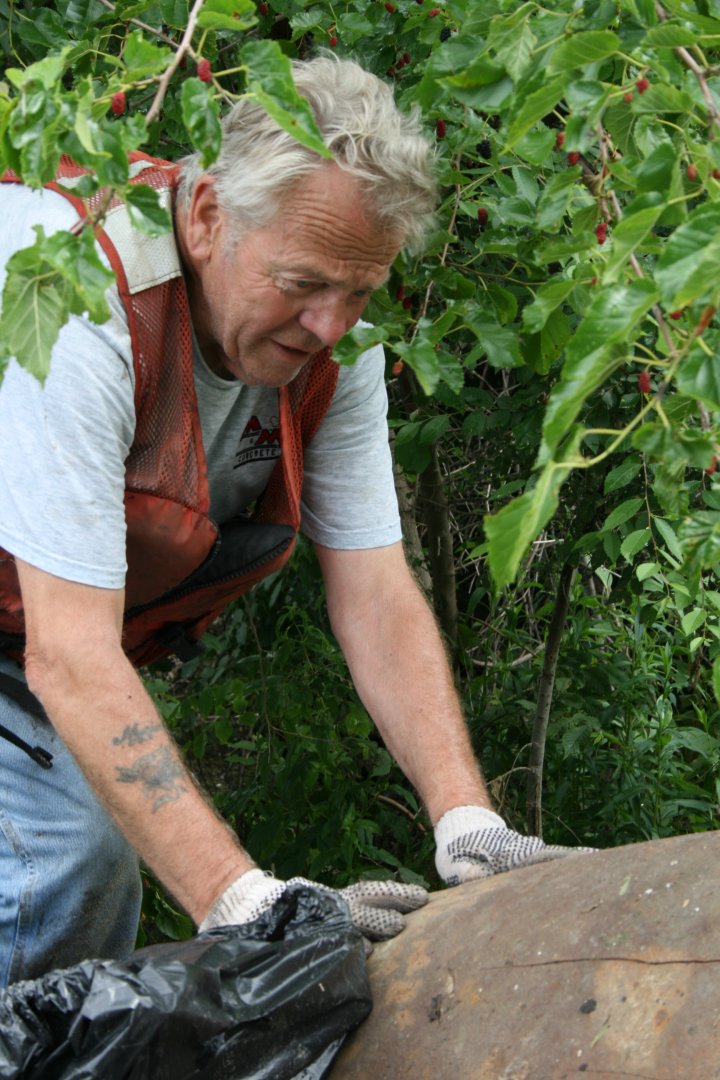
Volunteer David G with barrel

Volunteer David moves a barrel off the collection boat during The Great Mississippi River Cleanup held June 16, 2012 on the Winona District.